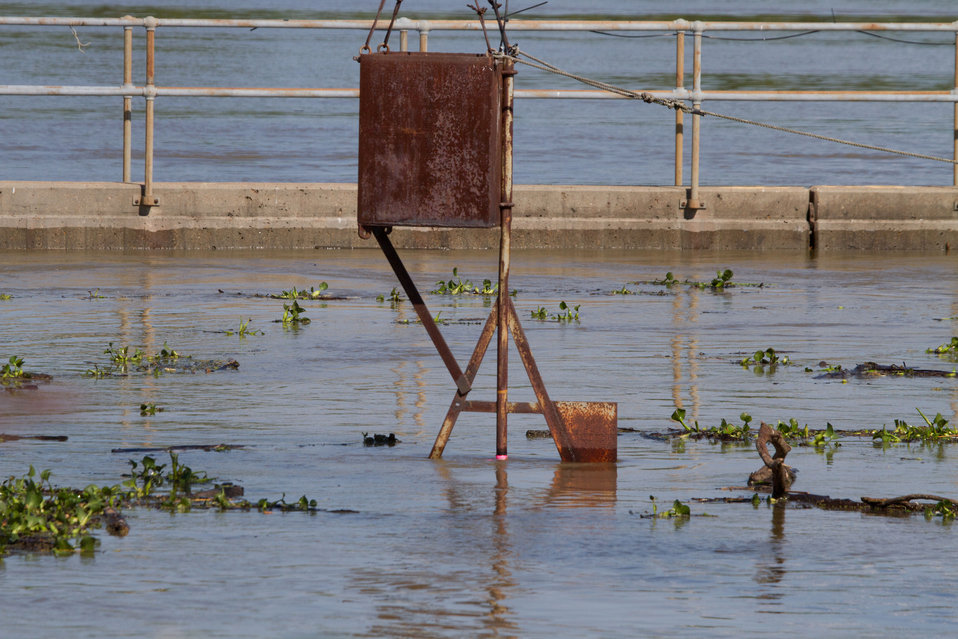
The Army Corps of Engineers conduct daily depth measurements along the intake side of The Old River Control Complex, Low Sill Structure in Concordia Parish, LA, on Tuesday, May 17, 2011. The measurements tell both the condition along the intake “ramp” and allow them to calculate the flow through the gates. The Old River Control Complex is designed to channel as much as 30 percent of the Mississippi River’s flow into the Gulf of Mexico through it’s eleven 44-foot wide gates across 566 foot span that separates the Mississippi and (the outflow channel to the) Red and Atchafalaya Rivers. Rated at 300,000 million gallons per minute (note: That’s more than seven Olympic sized swimming pools every second). Although this helps the Mississippi River, it (along with other concerns, puts back pressure on the Red River and other waterways, possibly causing some flooding of farms to avoid a catastrophic breech of the levee system. Most of the gates have been opened by a rolling crane and stored in racks. Debris, some as larger than telephone polls make their way through the gates and pool in eddies. The constant motion and contact with other objects, strip trees of their branches and bark. 20-30 pound Carp can frequently be seen jumping out of the white water.